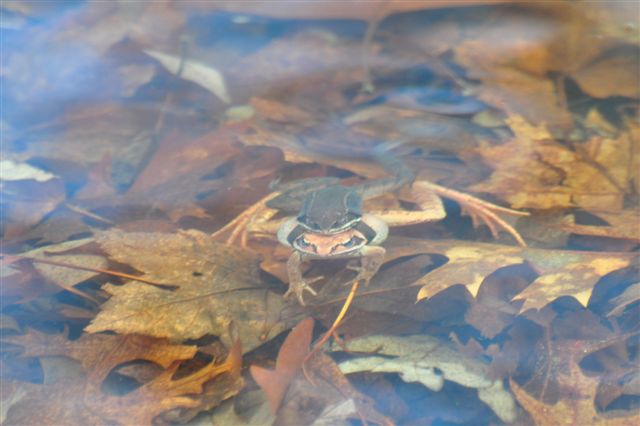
Frog in the Kettle Pond vernal pool at Ninigret National Wildlife Refuge, Rhode Island.